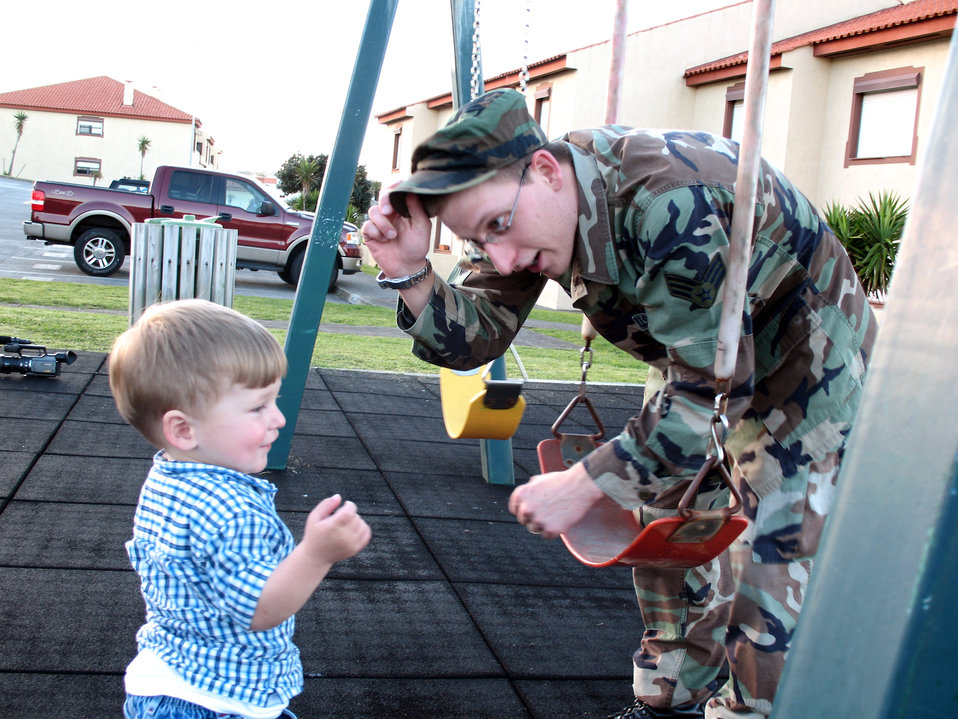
Air Force Assistance Fund changes lives

Senior Airman Matthew Reindl takes time to play with his son at the park after work April 20 at Lajes Field, Azores. The Reindls are one of many families helped by grants and loans from the Air Force Aid Society, which is one of the five Air Force Assistance Fund organizations that Airmen can make a contribution.